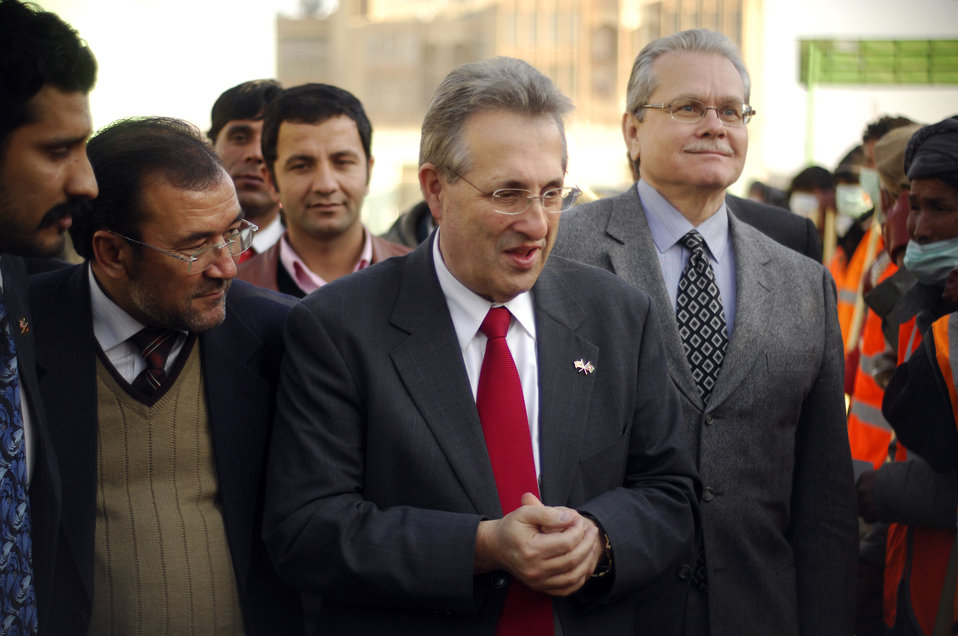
Care35